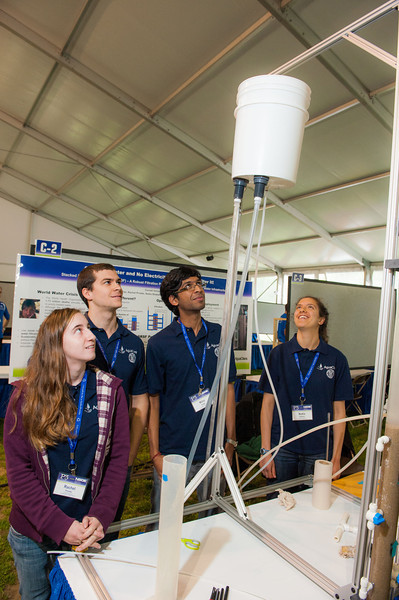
April 18, 2013 - P3 Design Expo, Cornell University

Cornell University - AguaClara Team showing off their 'Stacked Rapid Sand Filtration': A Robust Filtration Process for Sustainable Drinking Water.

Suitable drinking water is a critical need world-wide, and fresh water is the limiting resource on the planet for the foreseeable future. Cornell University students have built an innovative municipal water treatment system in Honduras that uses a stacked rapid sand filter. They are now improving the design to reduce the energy and water required for maintenance, lower capital and operating costs and simplify daily operation.

The stacked geometry of their design allows the same flow rate for the filtration and backwash cycles without the expensive pumps or elevated tanks required to backwash conventional rapid sand filters.

Cornell AguaClara Team Facebook page
Cornell AguaClara P3 page

People Prosperity and the Planet: National Sustainable Design Expo on the National Mall 18-19 April 2013